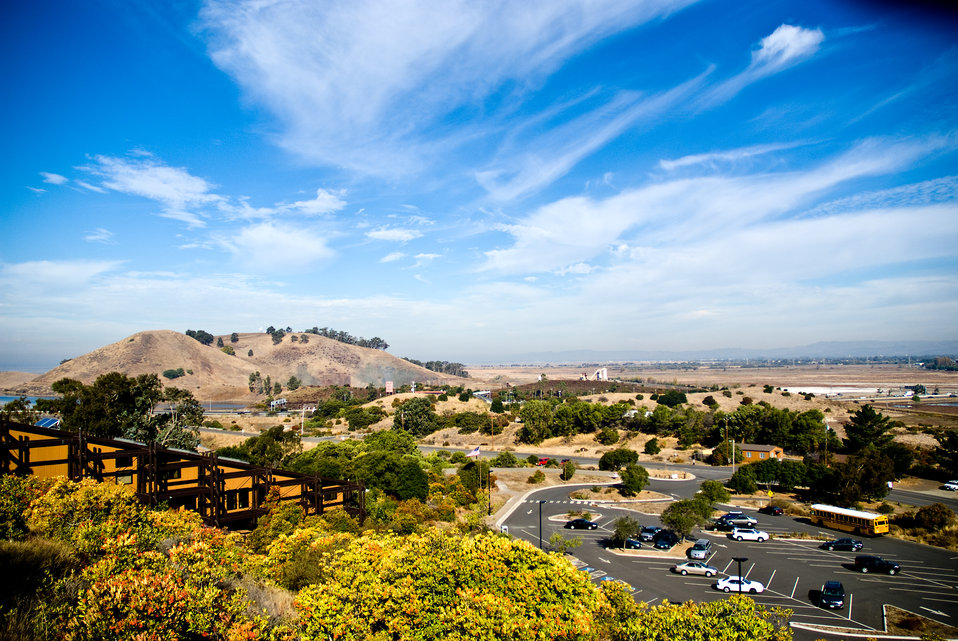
Don Edwards San Francisco Bay National Wildlife Refuge administrative office remodel
as a result of ARRA project funds.